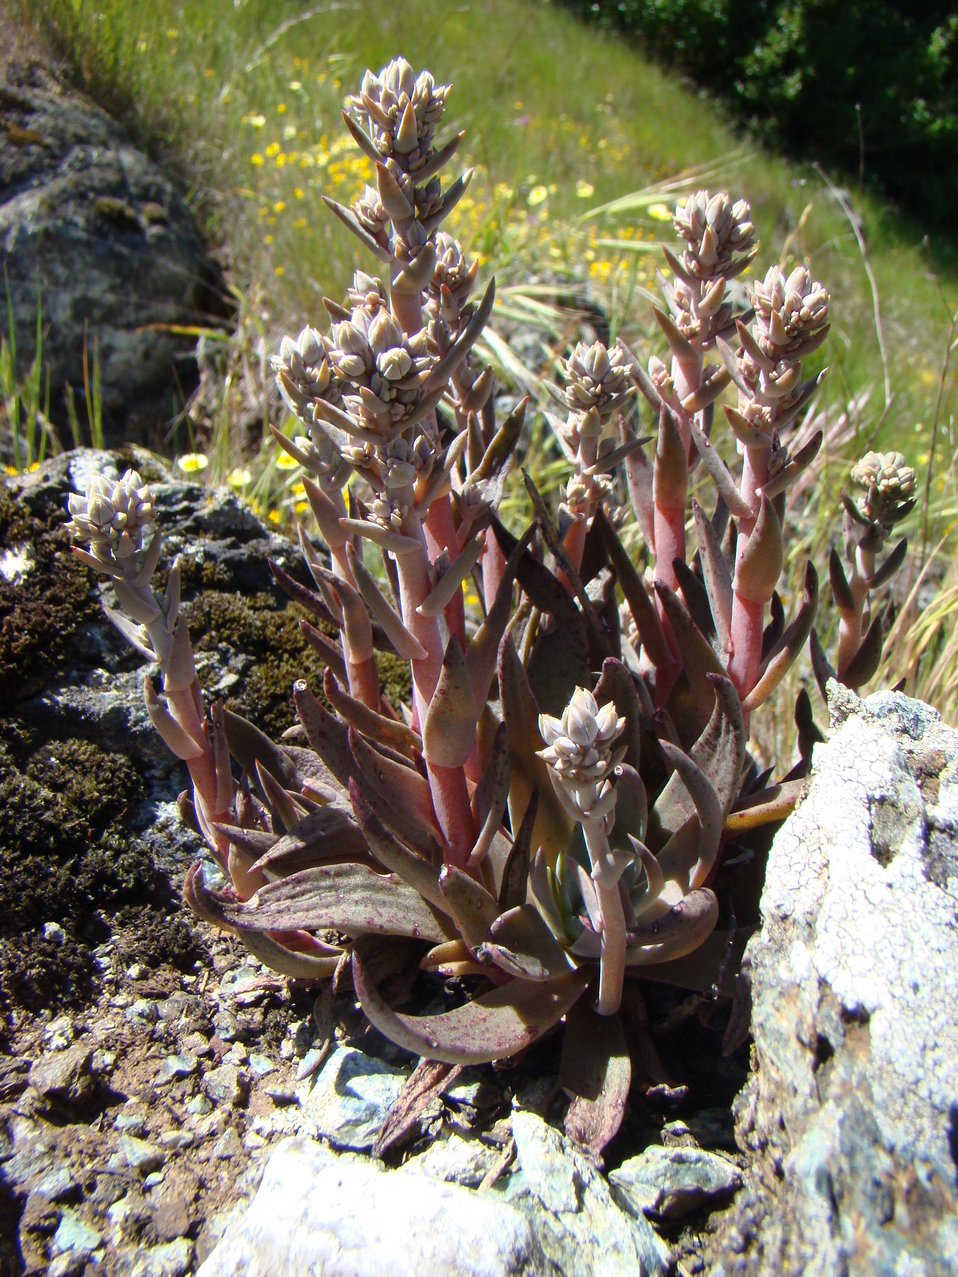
Santa Clara Valley Dudleya

Photo Credit: Ellen McBride/USFWS

Species protected by the Santa Clara Valley Habitat Conservation Plan